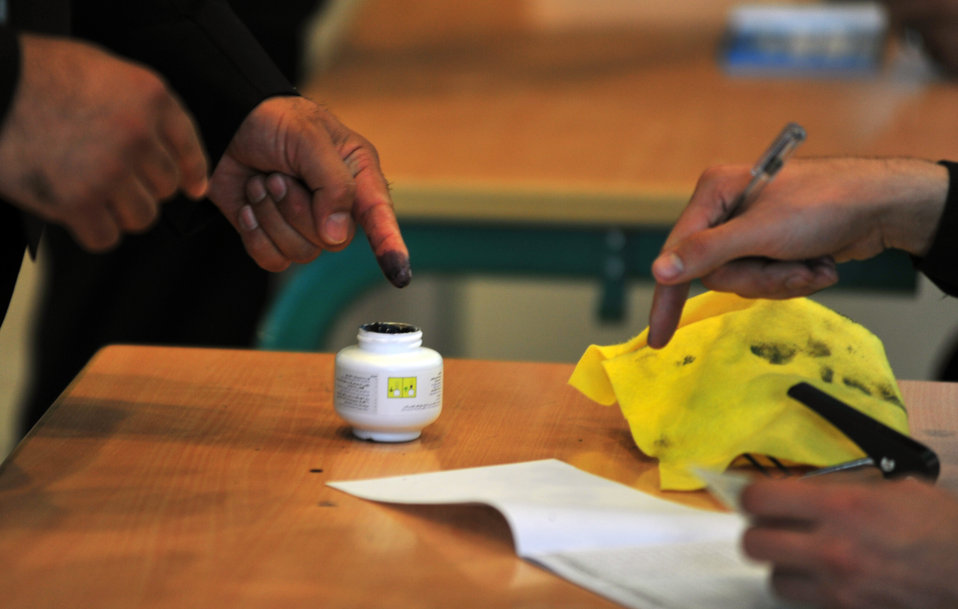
An Afghan voter dips his finger in indelible ink before casting his vote in Kabul.